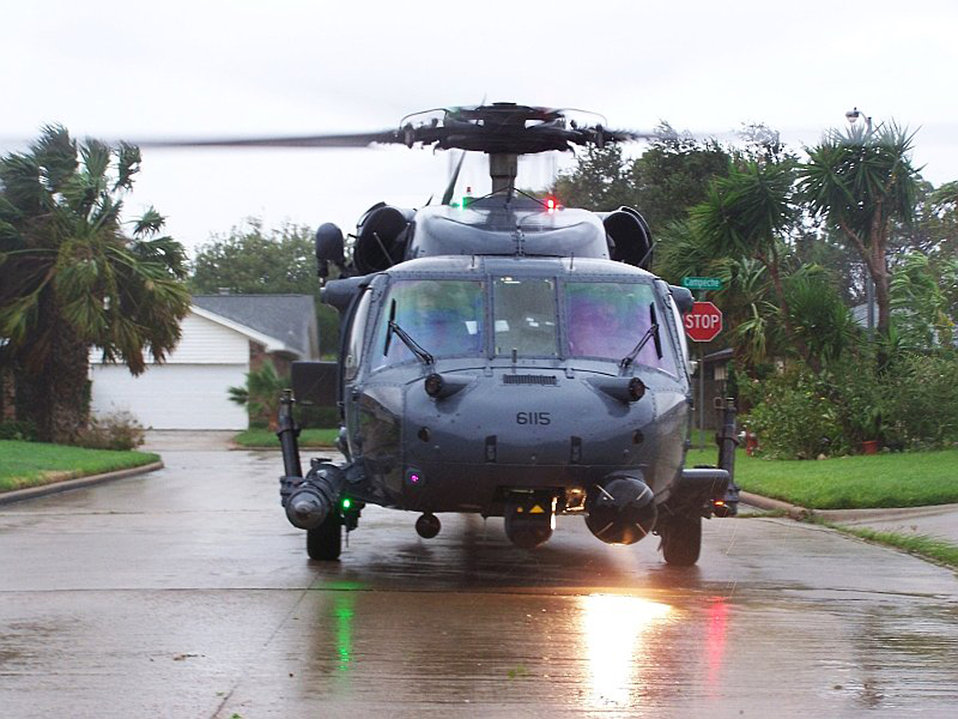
JTF-129 Airmen rescue civilians stranded in Galveston

Joint Task Force-129 crew, Jolly 92, lands in a tight space between houses to rescue an adult male in Galveston, Texas, Sept. 12. The California Air National Guard crew of Jolly 92 rescued six civilians and pets stranded in Galveston.